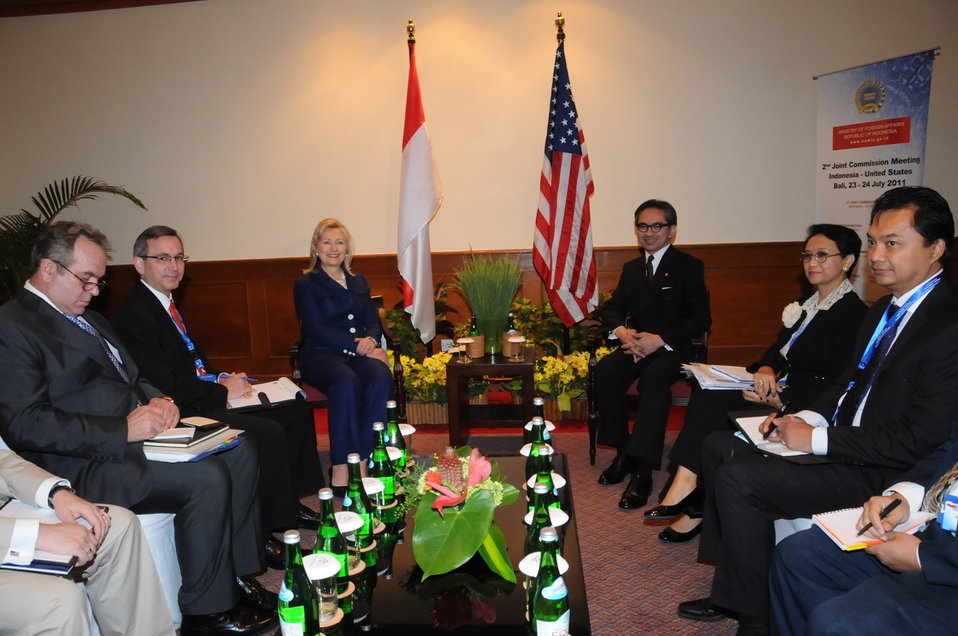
Secretary Clinton Meets With Indonesian Foreign Minister Natalegawa

U.S. Secretary of State Hillary Rodham Clinton meets with Indonesian Foreign Minister Natalegawa to discuss bilateral issues in Bali, Indonesia, on July 24, 2011. Also participating in the meeting, pictured on the left side, are: U.S. Assistant Secretary of State for East Asian and Pacific Affairs Kurt Campbell and U.S. Ambassador to Indonesia Scot Marciel. Participating in the meeting, pictured on the right side from right to left, are: Indonesian Ambassador to the U.S. Dino Patti Djalal and Indonesian Foreign Ministry’s Director General for Europe and America Retno Marsudi.